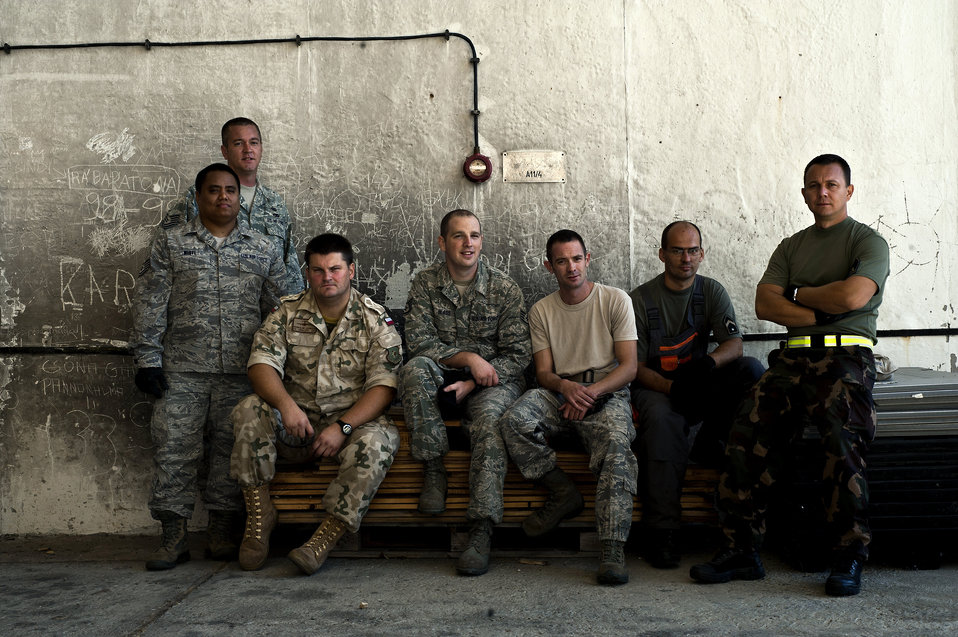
Papa AB, Hungary

(From left) Tech. Sgt. Brian Robisky, Tech. Sgt. Kevin White, Polish air force Sgt. Przemyslaw Jakubczak, Staff Sgt. Erik Blass, Staff Sgt. Justin Van Schefel, Hungarian air force Capt. Tamas Soter and Hungarian air force Sgt. Ternec Gelenscer are aerial porters assigned to the Heavy Airlift Wing at Papa Air Base, Hungary. The aerial porter section is made up of nine members from five different countries, who work alongside their Hungarian counterparts.